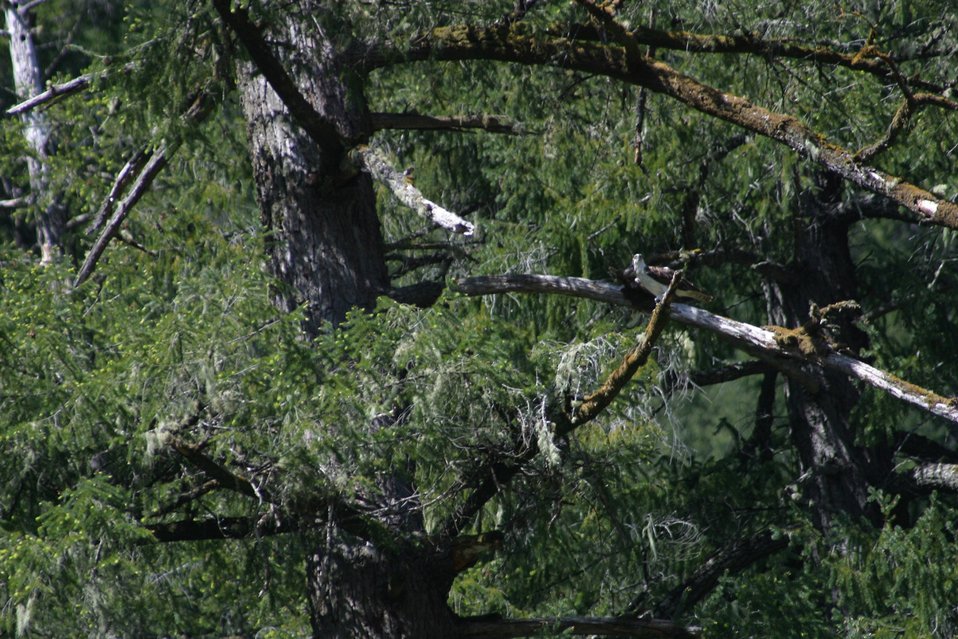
Wild section of the Rogue River from Grave Creek to Foster Bar May 19 to May 22.